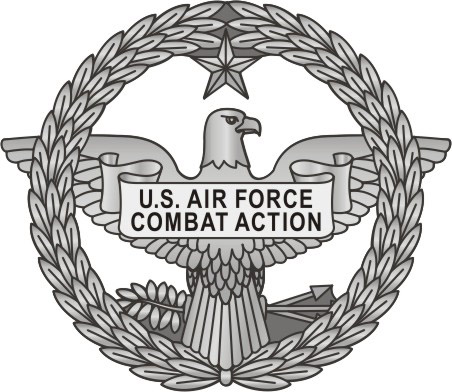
Air Force releases combat action medal criteria

The reverse side of the Air Force combat action medal.